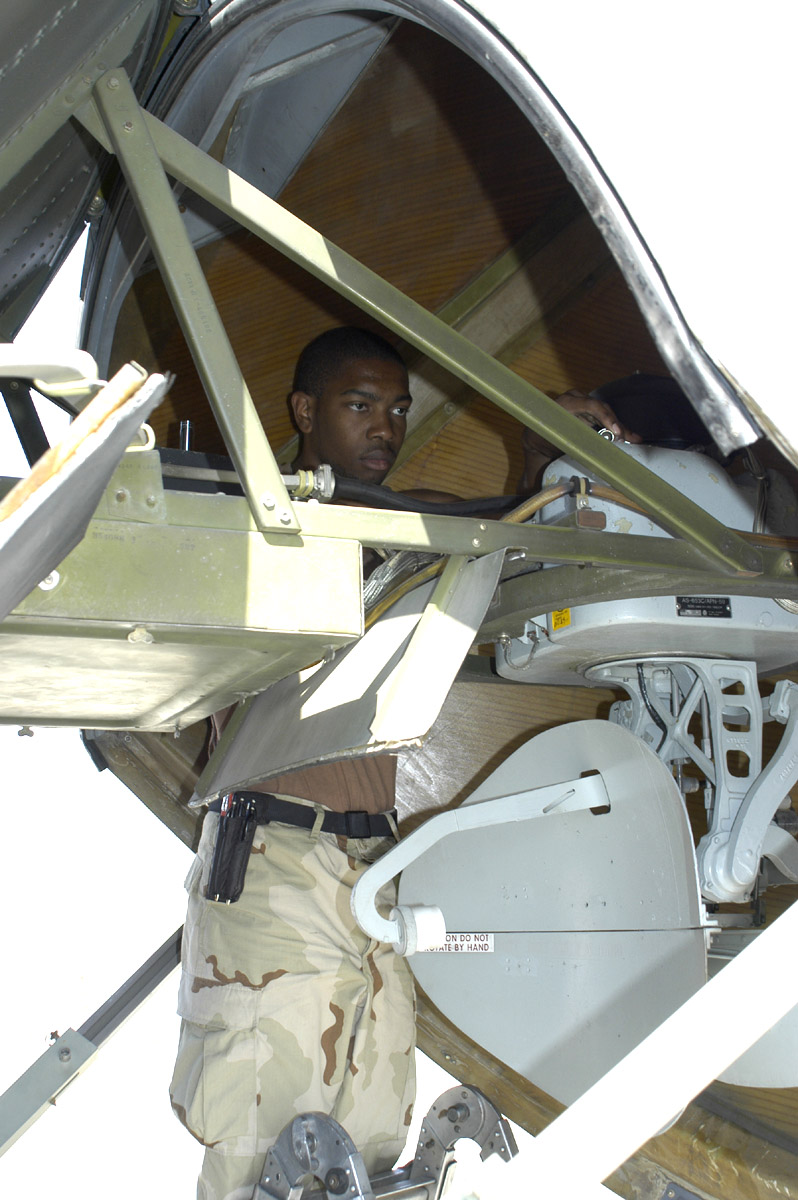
Gyro support

SOUTHWEST ASIA -- Senior Airman Anthony Martin inspects a C-130 Hercules radar gyro system to ensure it is working properly. The Airman, with the 386th Expeditionary Aircraft Maintenance Squadron here, is deployed from Little Rock Air Force Base, Ark., to help maintains aircraft conducting operations in Iraq, Afghanistan and the Horn of Africa.